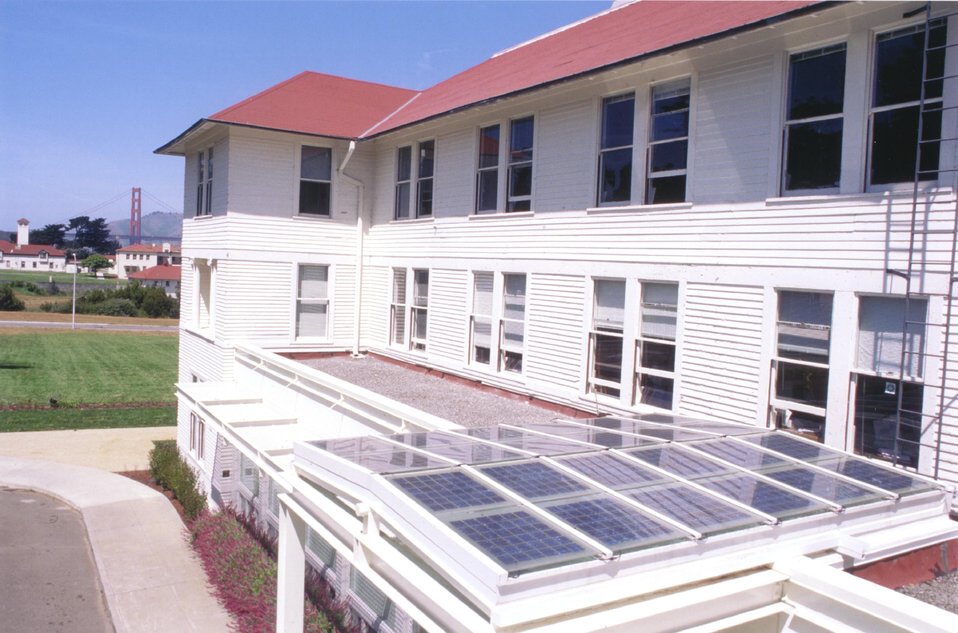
PHOTOVOLTAIC CELLS LAMINATED TO SKYLIGHT GLASS AT THE THOREAU CENTER ATRIUM, SAN FRANCISCO, CA.

THE FIRST APPLICATION FOR INTEGRATING PHOTOVOLTAICS INTO A FEDERAL BUILDING IS THE SKY LIGHTED ENTRY WAY OF THE THOREAU CENTER FOR SUSTAINABILITY AT PRESIDIO NATIONAL PARK, SAN FRANCISCO, CA. THE PHOTOVOLTAIC CELLS ARE LAMINATED TO THE SKYLIGHT GLASS AT THE FACILITY.